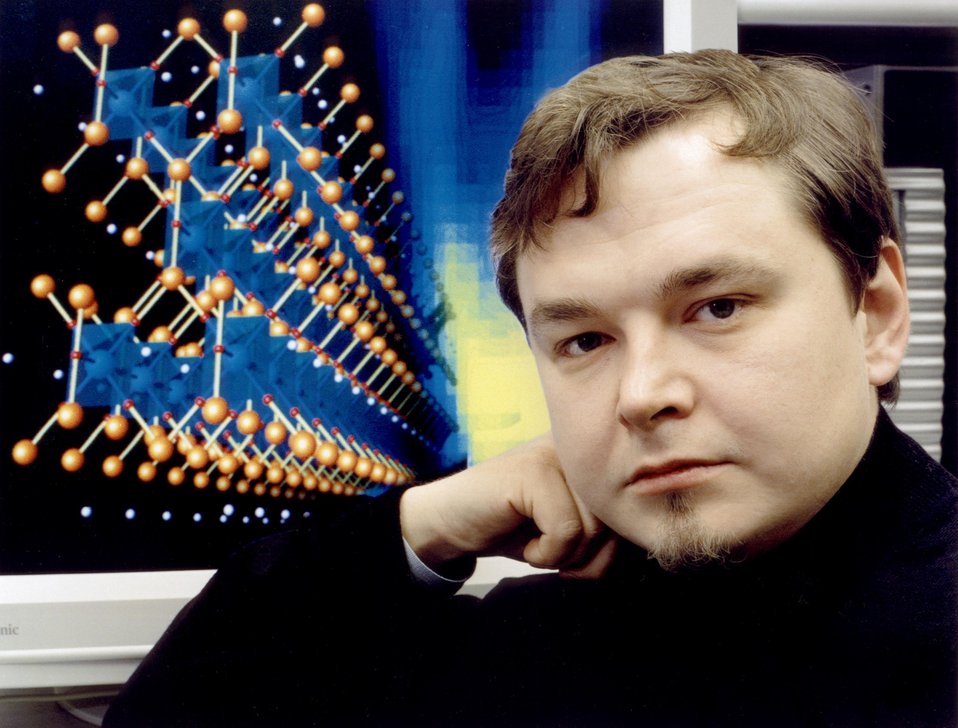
PROBING THE PROPERTIES OF 'MIXED' QUANTUM/CLASSICAL MAGNETS.

THIS STUDY DEALS WITH THE MOST BASIC AND FUNDAMENTAL ASPECTS OF MATERIAL MAGNETISM. AN OUTSTANDING PROBLEM IN CONDENSED-MATTER PHYSICS IS IN UNDERSTANDING HOW CLASSICAL AND QUANTUM MAGNETS INTERACT WHEN COMBINED IN A SINGLE MATERIAL. THIS IS THE FIRST KNOWN EXPERIMENTAL EXAMPLE OF SUCH 'MIXED' MAGNETS, WHICH ARE FOUND IN COMPLEX RARE-EARTH NICKEL OXIDES.